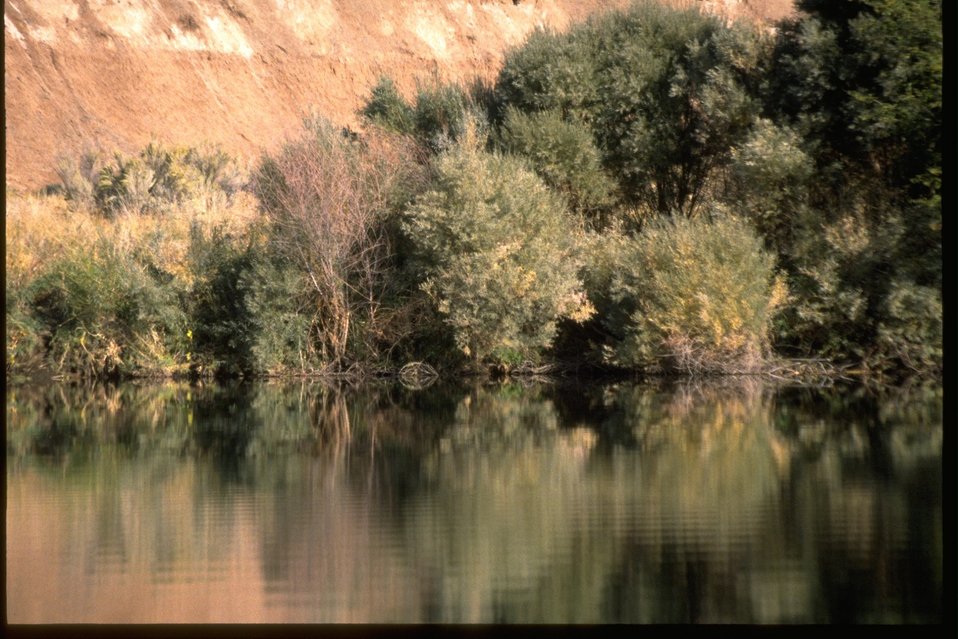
Riparian vegetation along the bank of the John Day River, near Bridge Creek.